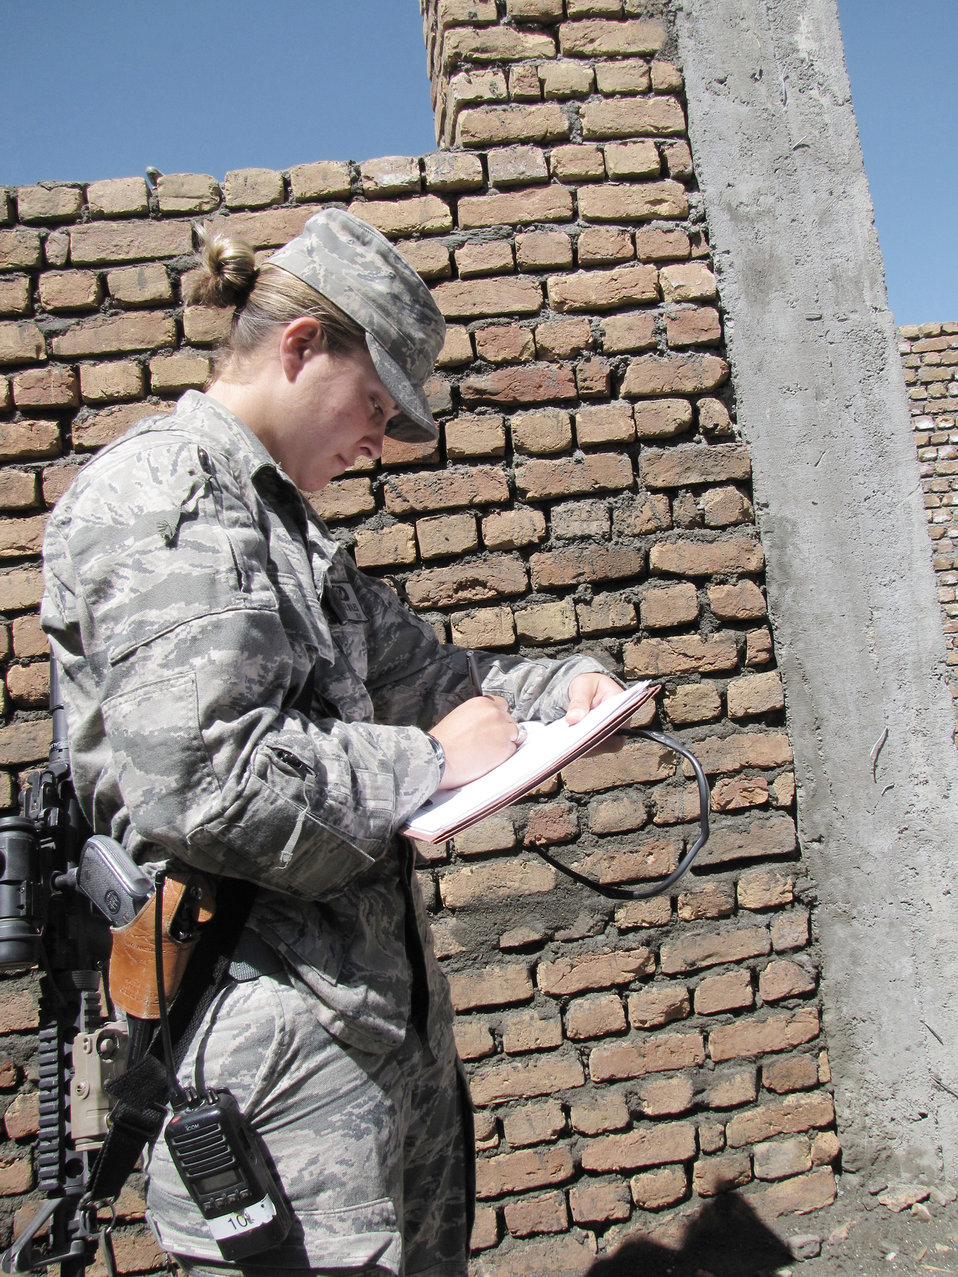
Panjshir PRT proves 'peace, partnership, progress' possible

1st Lt. Kate Miles takes notes on construction progress of a new government building Sept. 6, 2009, in Panjshir, Afghanistan. Lieutenant Miles, a civil engineer with the provincial reconstruction team, and her team ensure contractors perform work according to code. She is a Rochester, N.Y., native and deployed from Luke Air Force Base, Ariz.